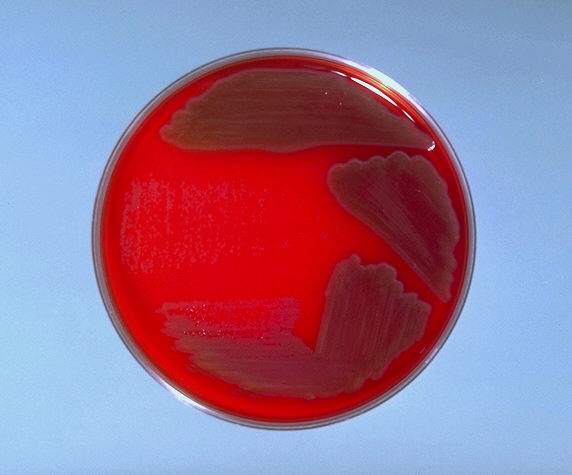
Blood agar plate culture of Flavobacterium odoratum.